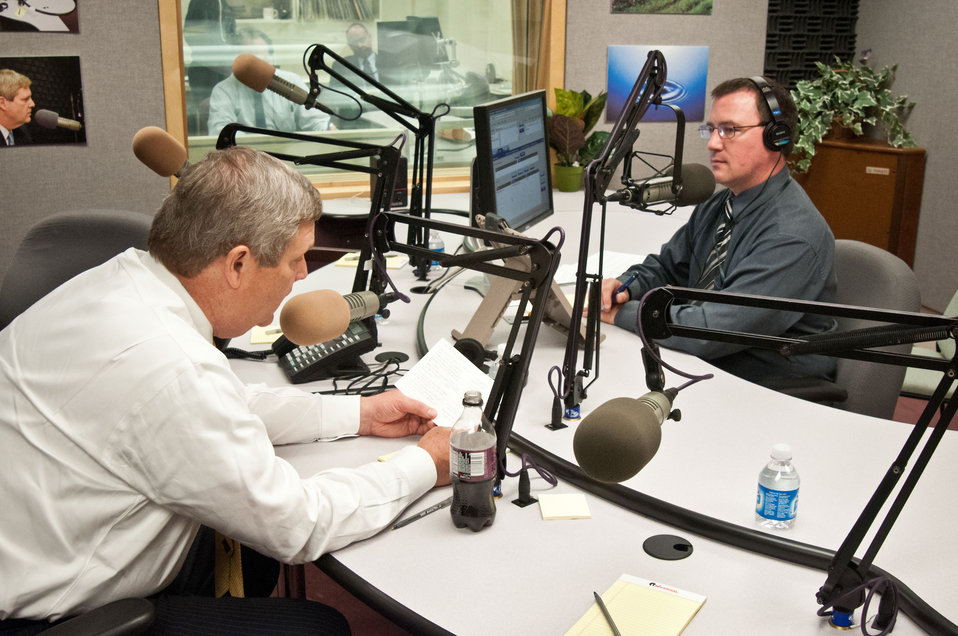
Agriculture Secretary Tom Vilsack (left) and United States Department of Agriculture Radio Reporter Rod Bain (right) during a media conference call to discuss the upcoming fire season at the United States Department of Agriculture in Washington, D.C., on Thursday, April 26, 2012. Included in the conference call were Interior Secretary Ken Salazar, Forest Service Chief Tom Tidwell and Federal Emergency Management Agency (FEMA) Administrator William Fugate.